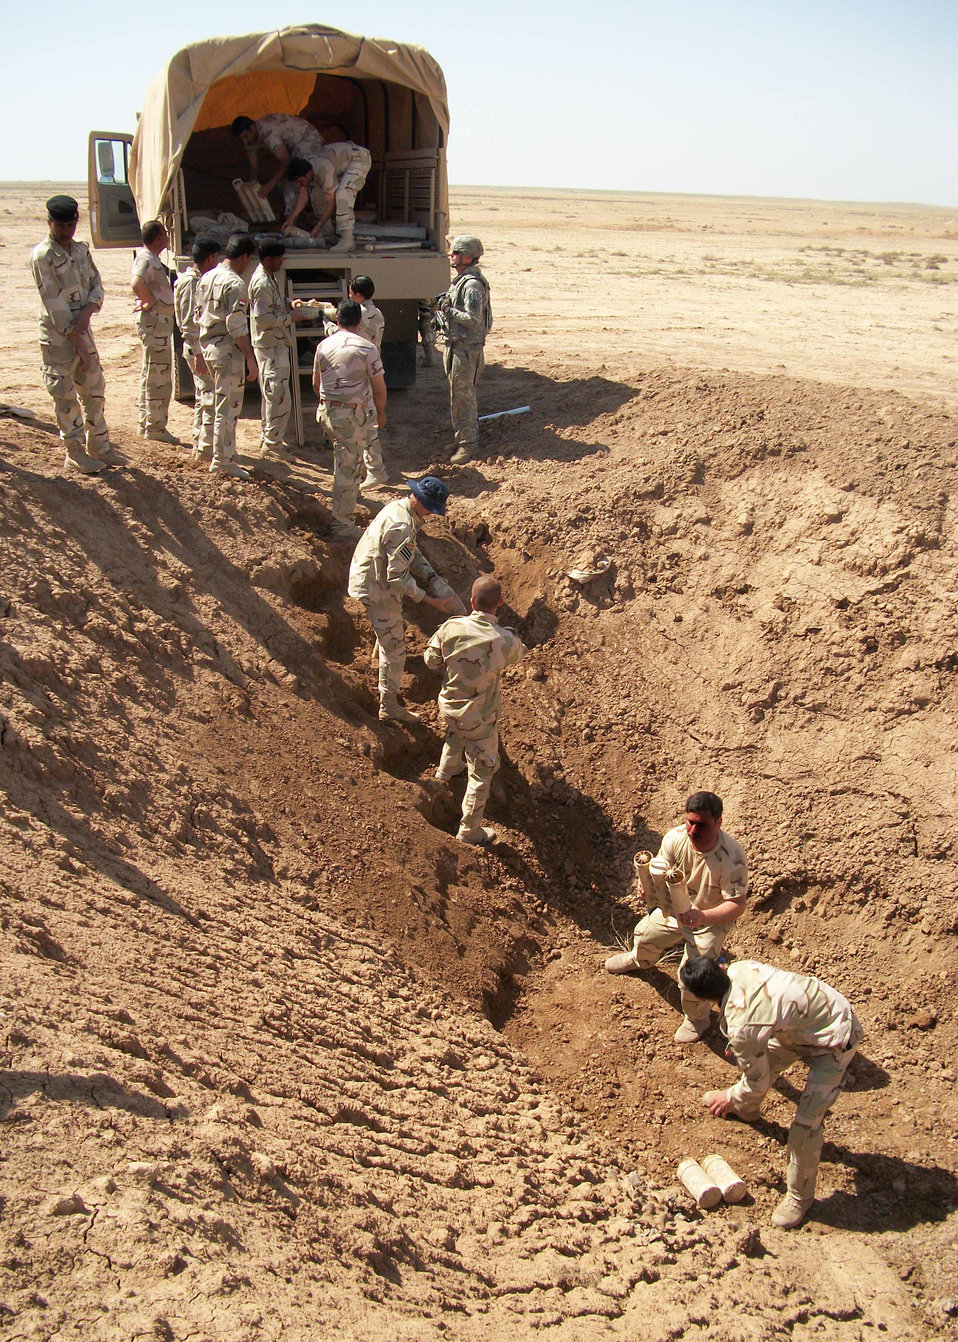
Iraqi air force EOD training

321st Expeditionary Operation Support Squadron Explosive Ordnance Disposal team members and Iraqi airmen build a mound of munitions and unexploded ordnances for a detonation April 28, 2011, at Contingency Operating Site Warrior in Iraq.